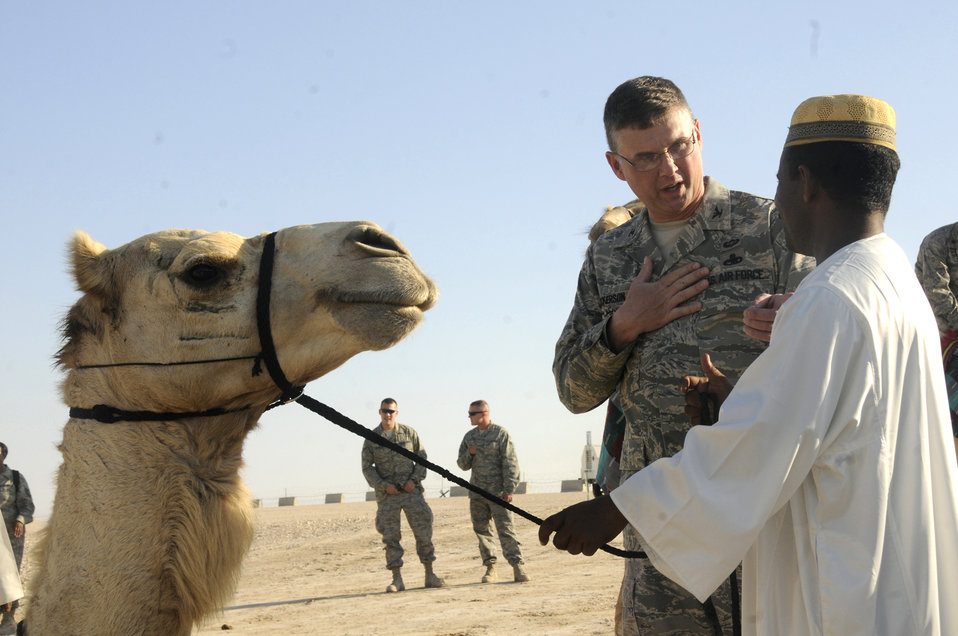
Airmen build rapport with community

Col. Donald Dickerson talks to a local national Dec. 23 at an air base in Southwest Asia. Colonel Dickerson is the 379th Air Expeditionary Wing Host Nation Coordination Cell director. He is a native of Roanoke, Va., and is deployed from Travis Air Force Base, Calif.